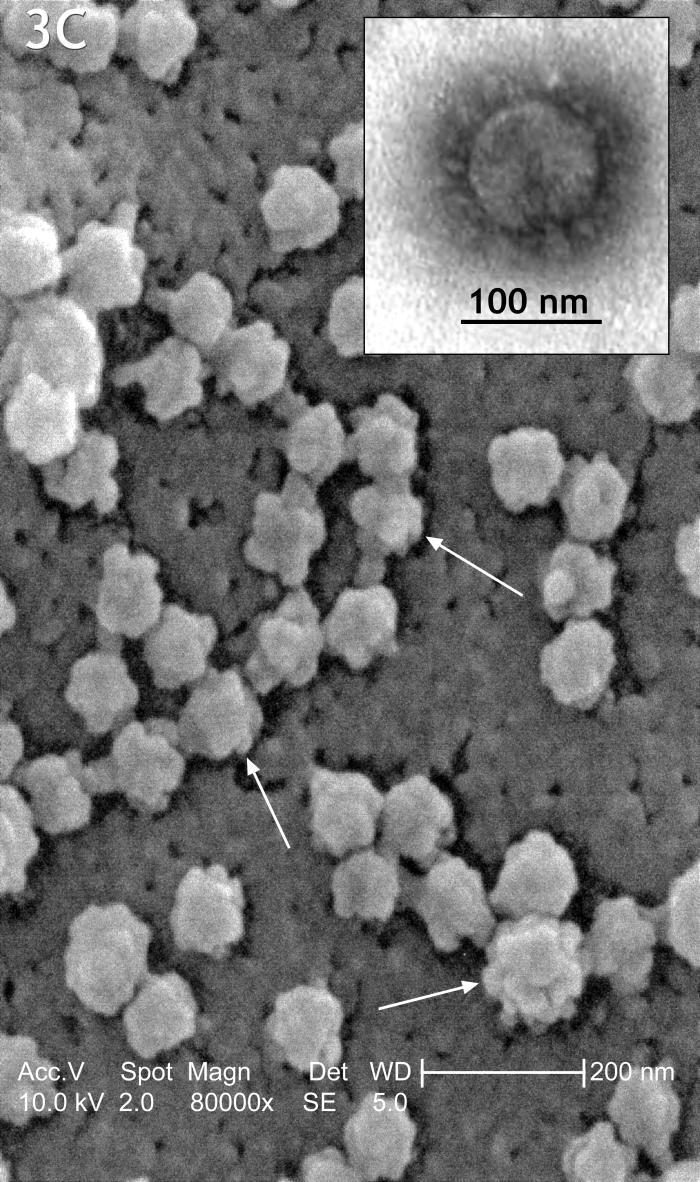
This scanning electron micrograph reveals the 'rosettelike' appearance of the matured SARS-CoV (coronavirus) particles (arrows). See PHIL 10819 for a colorized view of thios image.